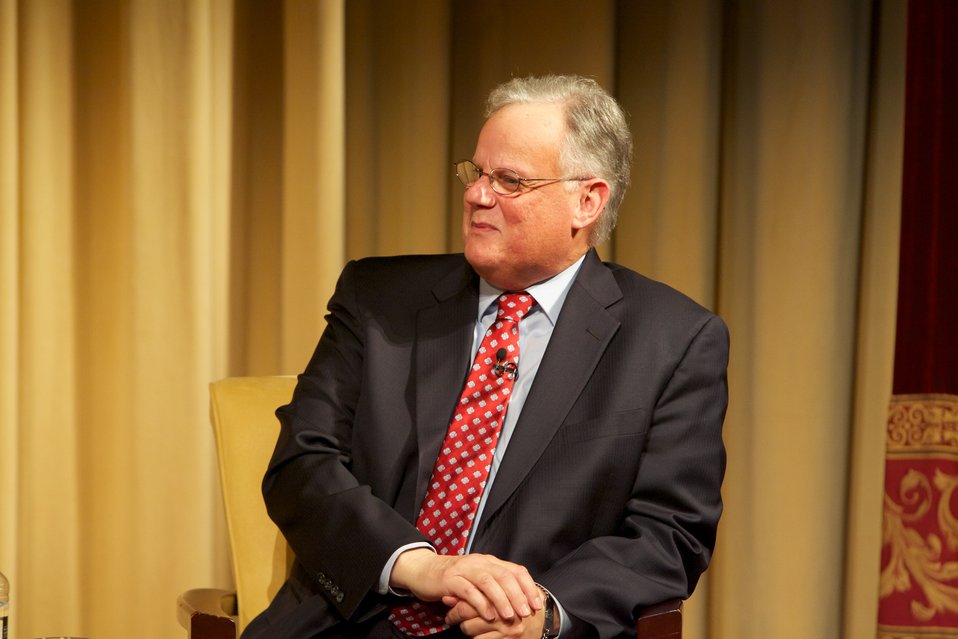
The Monuments Men; Michael J. Kurtz (right), former Assistant Archivist for Records Services